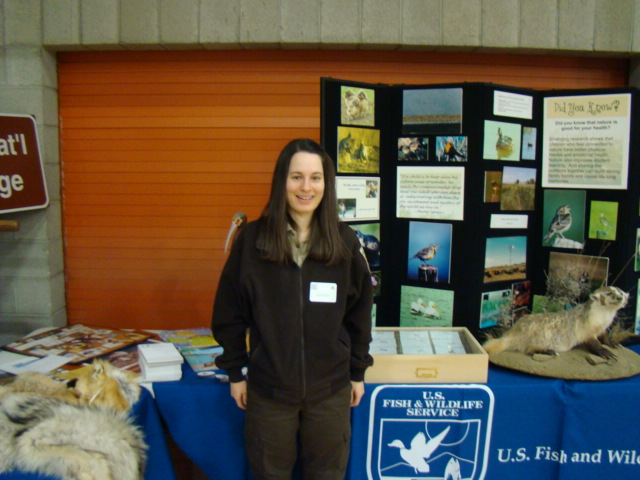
Great Falls STEM Expo

Every spring Benton Lake NWR participates in the Great Falls STEM (Science, Technology, Engineering, Math) Expo. We set up a booth complete with pictures, furs, skulls, animals, and even a duck banding station!